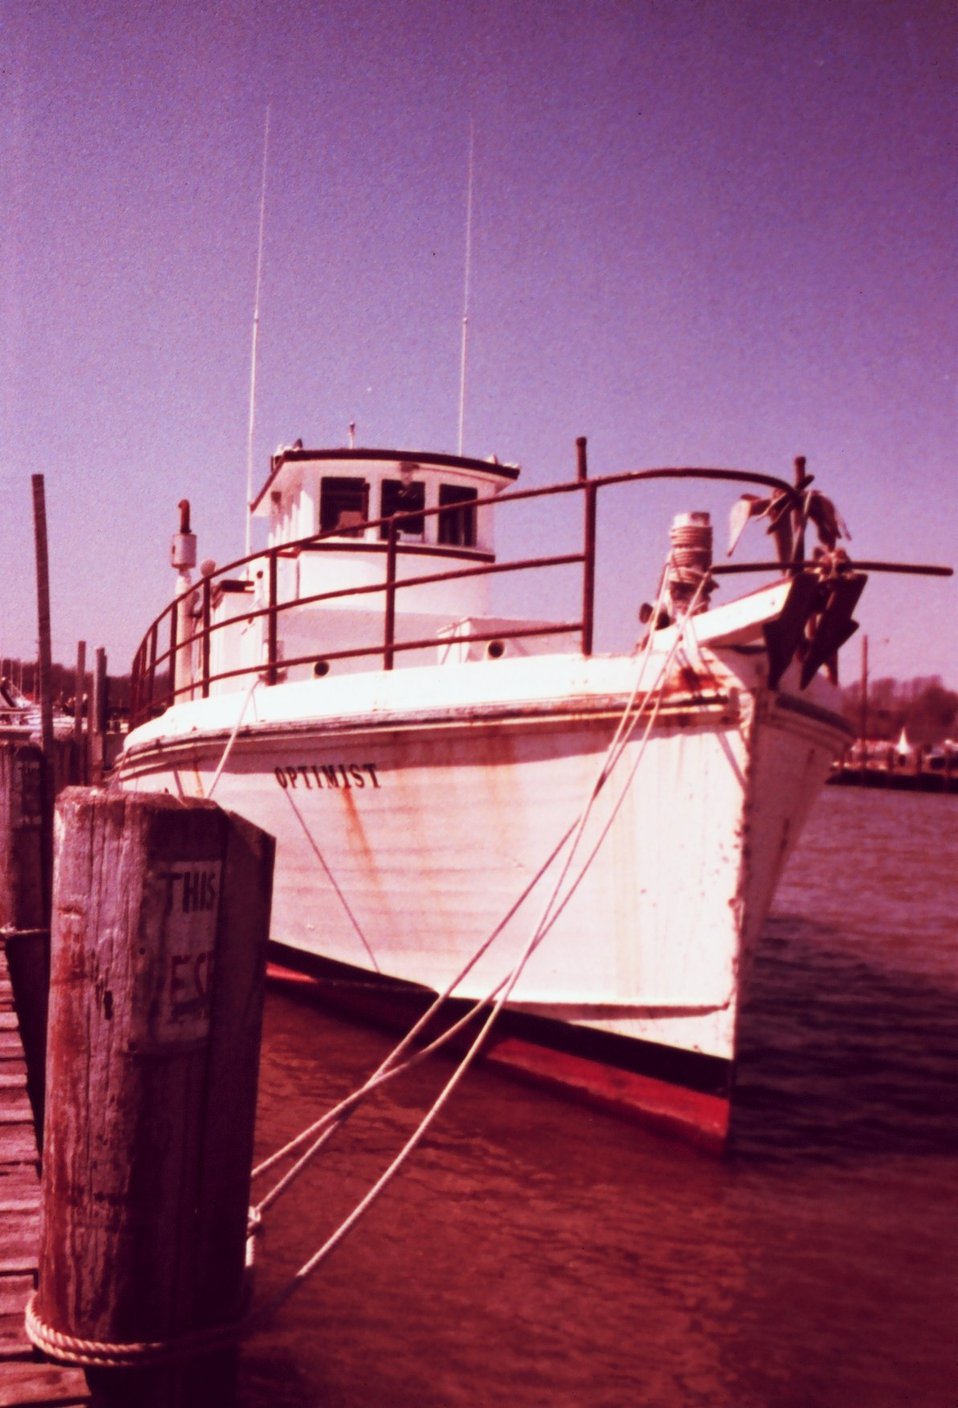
Charter boat 'Optimist' stands ready at Chesapeake Beach to take its next set of patrons fishing on the Chesapeake Bay.